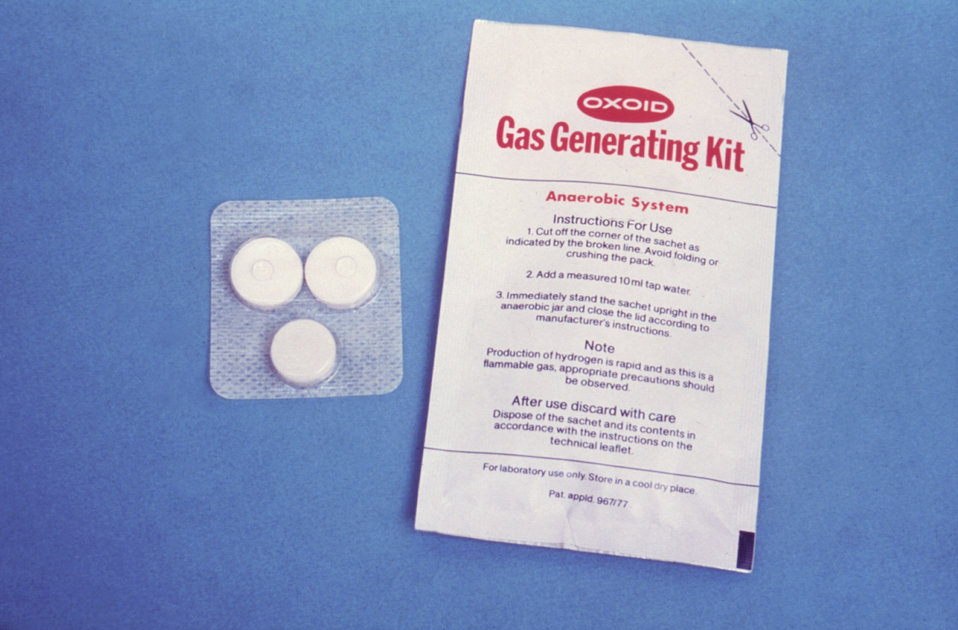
This 1978 image depicts a GasPak generator envelope, and 3 generator tablets, showing how they appear inside the envelope.